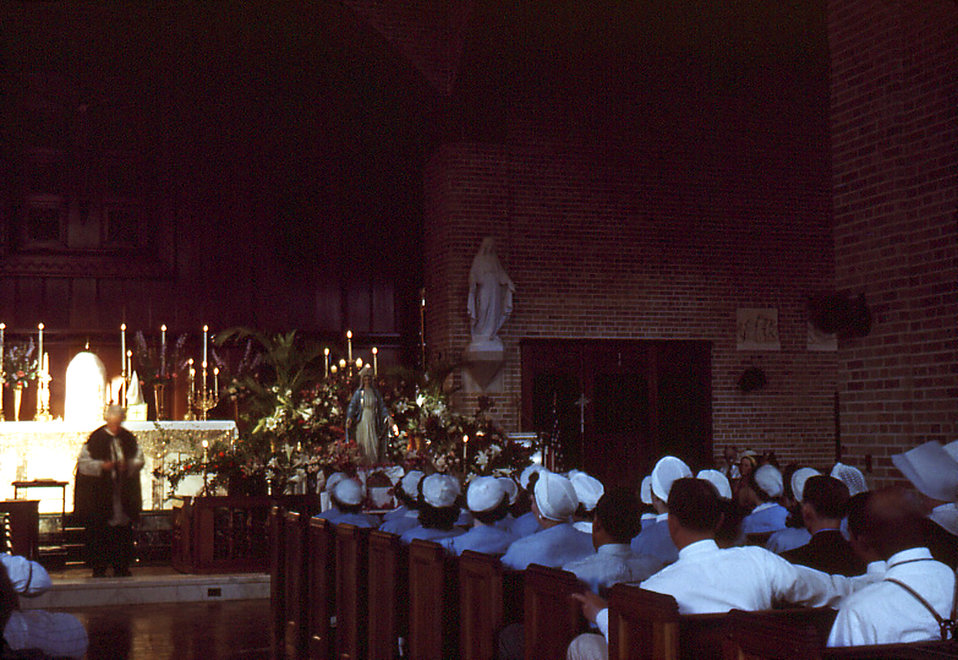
In this historic image a congregation of Catholic patients were shown attending mass on a typical Sunday morning held at one of the churches on the Carville, Louisiana Leprosarium grounds. There were two churches, and both had a good attendance rate on Sundays.The National Hansen's Disease Museum's (NHDM) mission is to collect, preserve and interpret the medical and cultural artifacts of the Carville Historic District. In addition, we want to promote the understanding, identification, and treatment of Hansen's Disease (leprosy). We fulfill this mission by creating and maintaining museum displays, traveling exhibits, publications and a website in order to educate and inform the public on all levels.